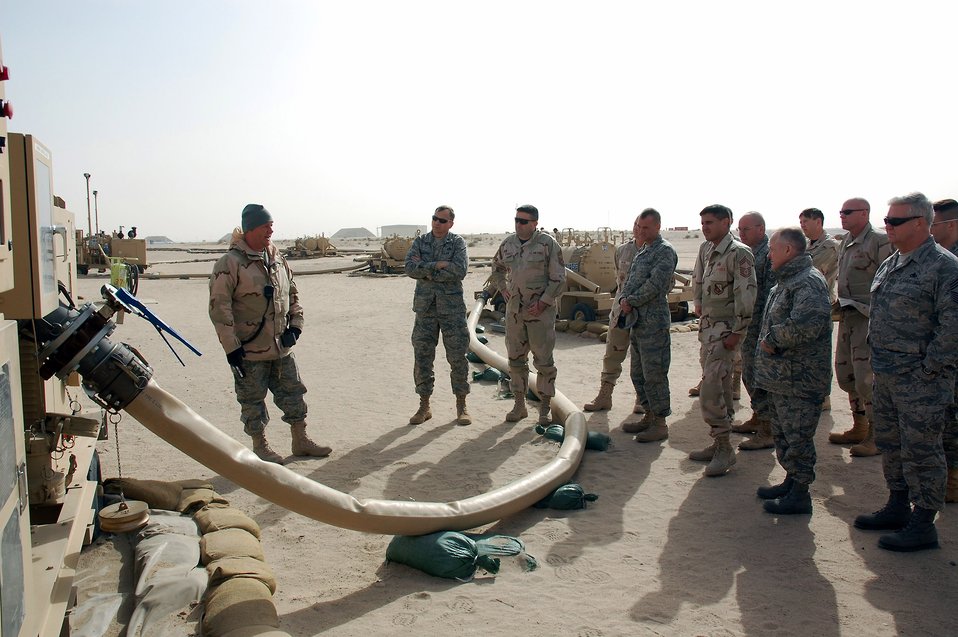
Who is on your team?

Deployed senior leaders attend the U.S. Central Command Air Forces Expeditionary Maintenance Group Conference held Feb. 3 at an air base in Southwest Asia. The conference provided leaders an opportunity to talk face-to-face and exchange ideas and benchmark concepts and best practices throughout the deployed area of responsibility.